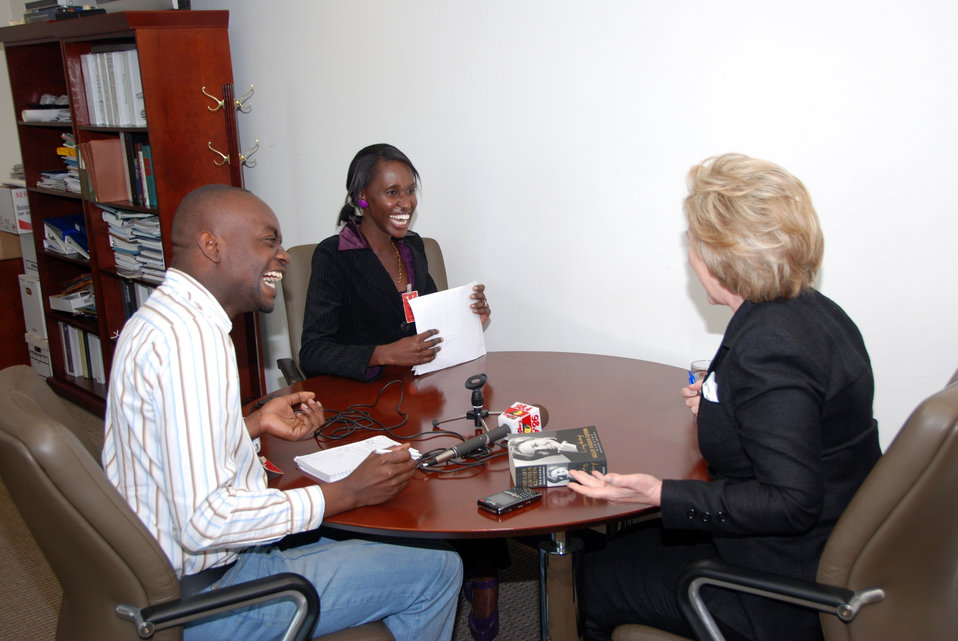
Secretary Clinton Press Interviews in Kenya

U.S. Secretary of State Hillary Rodham Clinton participates in local press interviews in Nairobi, Kenya August 6, 2009.